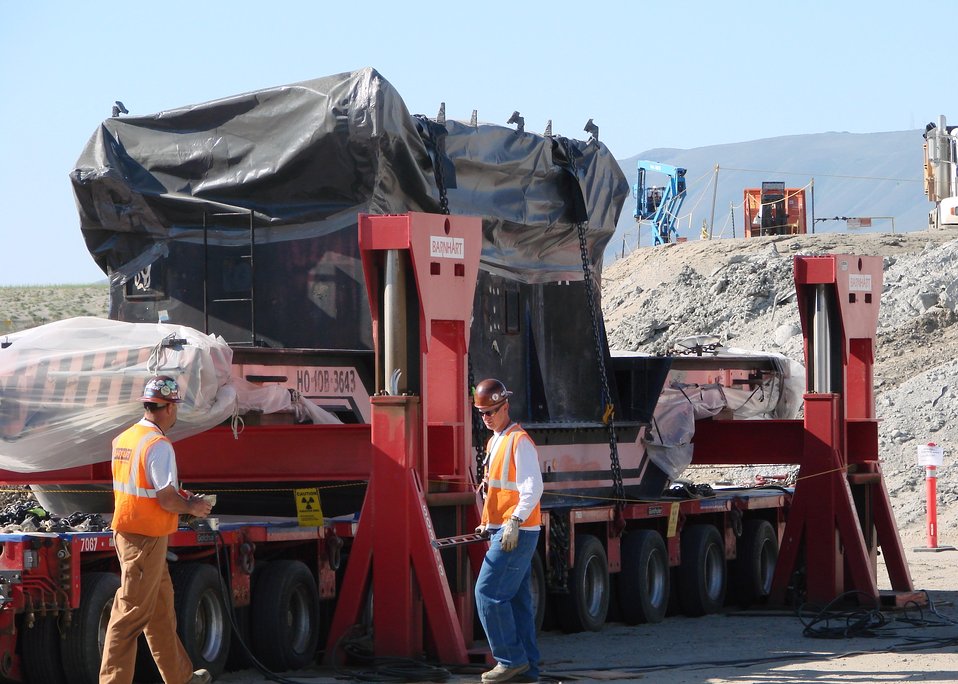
Hanford Completes Recovery Act Project Under Budget, Ahead of Schedule

Washington Closure Hanford disposed 11 railcars from the Hanford Site at the Environmental Restoration Disposal Facility. The railcars were used to transport irradiated fuel from the reactors to the chemical separation plants, where workers extracted plutonium.